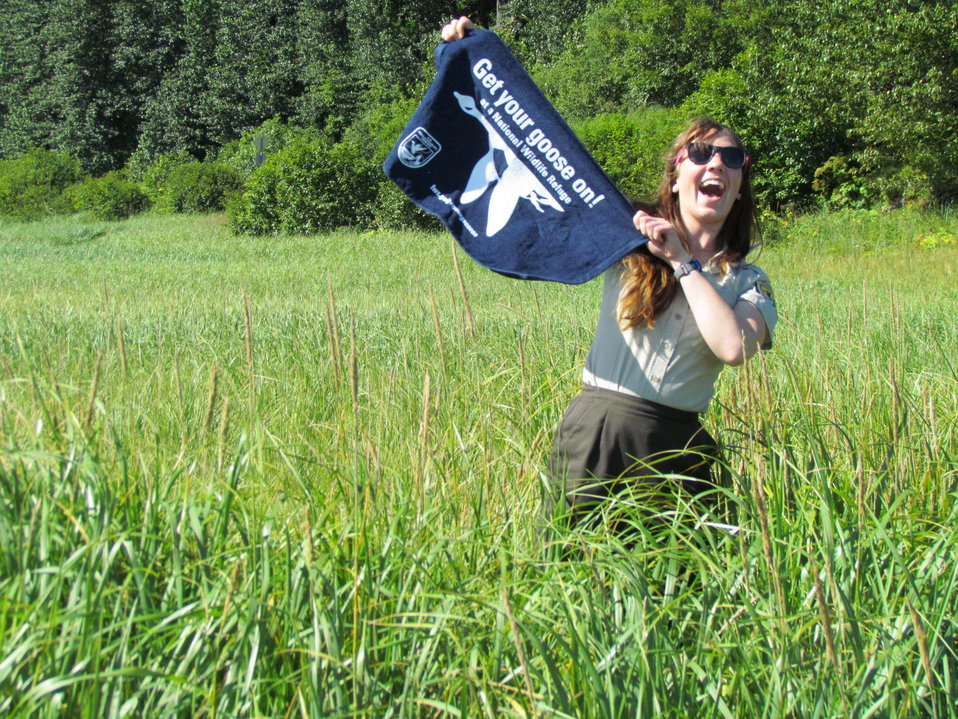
Get Your Goose On! - Alaska Style

Seasonal Park Ranger, Kari Eschenbacher

Credit: Shelly Lawson / USFWS

The Kodiak National Wildlife Refuge is a United States National Wildlife Refuge in the Kodiak Archipelago in southwestern Alaska, United States.

The Kodiak National Wildlife Refuge includes the southwestern two-thirds of Kodiak Island, Uganik Island, the Red Peaks area of Afognak Island and all of Ban Island in the archipelago. It encompasses 1,990,418 acres (8,054.94 km2).[2] The refuge is administered from offices in Kodiak.

The refuge contains seven major rivers and about 100 streams. It is a spawning ground for all six species of Pacific Ocean salmon, trout and several other fish species, as well as a nesting ground for 250 species of bird, many of which feed on salmon. The refuge has only six native species of mammals: Kodiak brown bear, red fox, river otter, ermine, little brown bat and tundra vole. The non-native mammals Sitka deer, mountain goat, Roosevelt elk, snowshoe hare and beaver were introduced to the archipelago between the 1920s and 1950s and are now hunted and trapped.

The climate of the refuge is that of southern Alaska, mild and rainy. Many areas in the refuge are densely forested with Sitka Spruce at lower elevations. There are grasslands in drier areas and at higher elevations. The refuge contains several small glaciers.